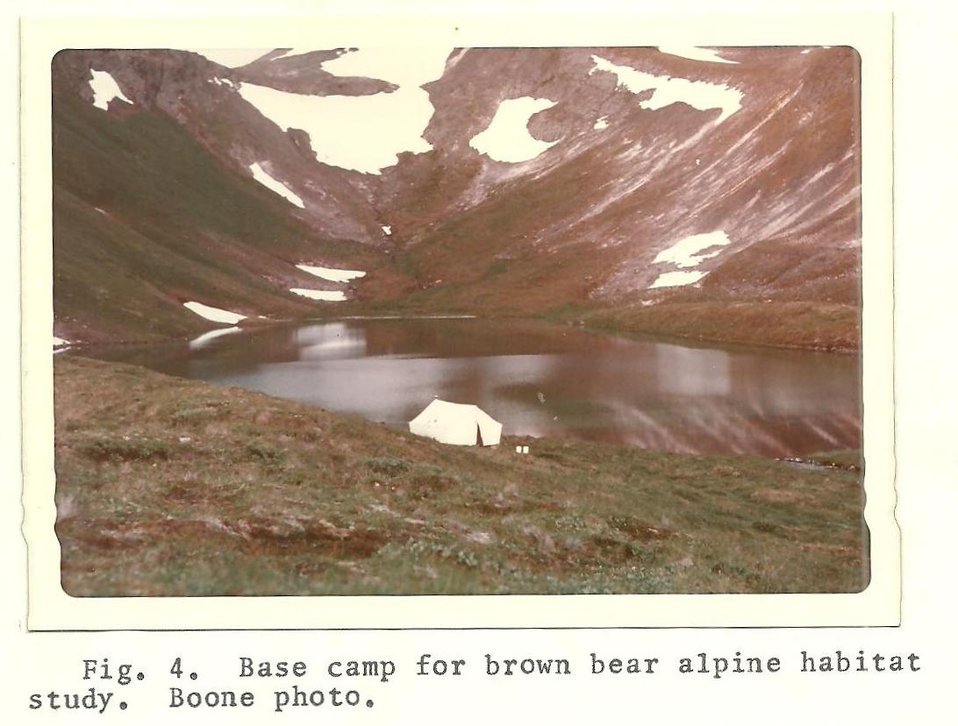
(1974) Alpine Base Camp

Credit: USFWS

Source and Contact: Kodiak National Wildlife Refuge